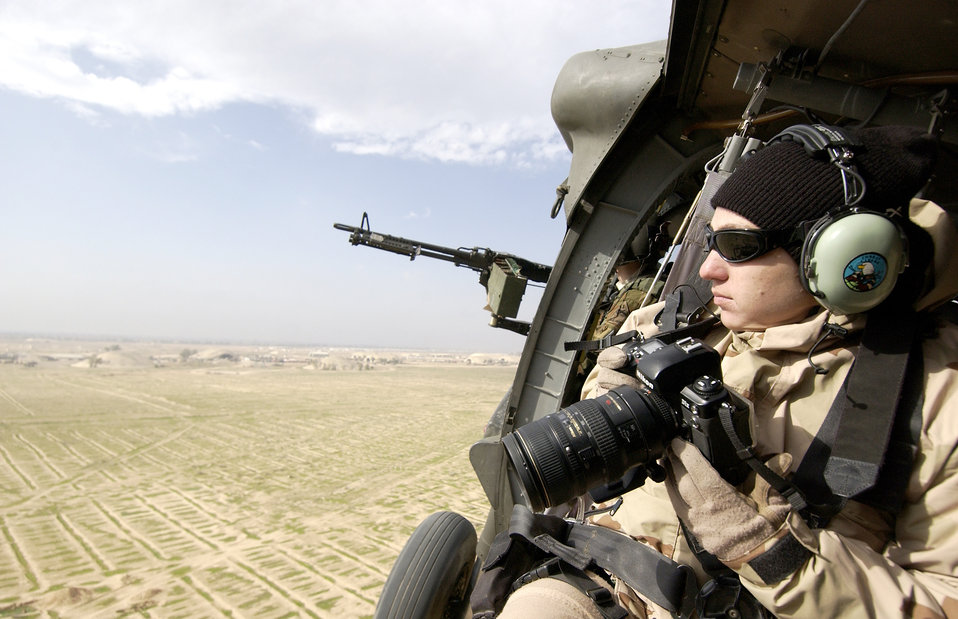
Straight shooting

OVER IRAQ (AFPN) -- Staff Sgt. Suzanne Jenkins takes photographs over Iraq from a UH-60L Blackhawk helicopter. Jenkins is an aerial photographer deployed from the 1st Combat Camera Squadron at Charleston Air Force Base, S.C.